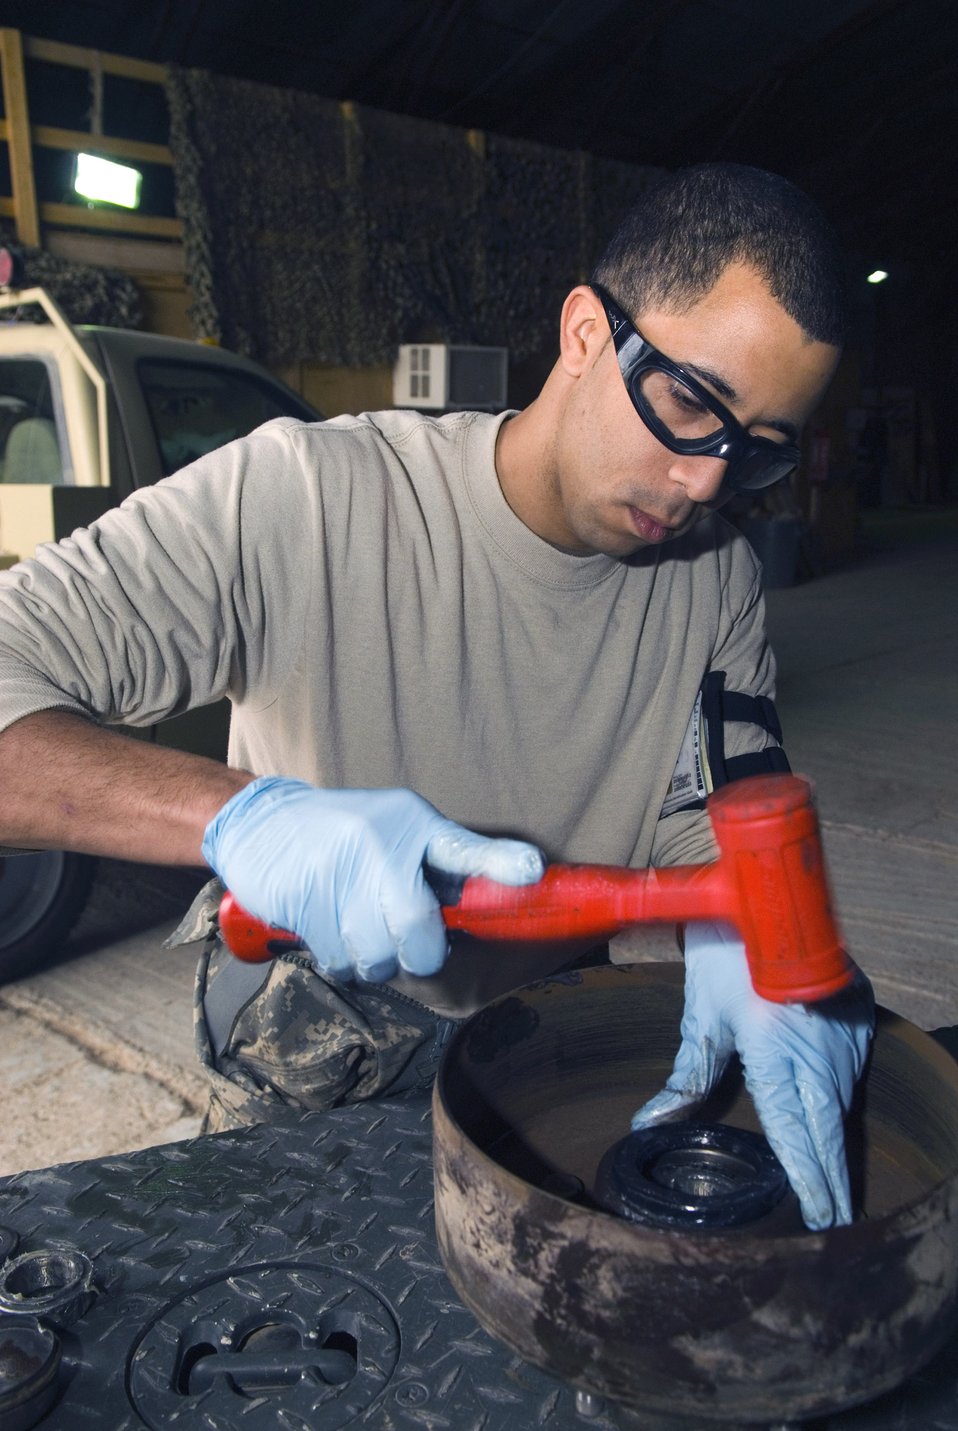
Munitions don't fly without these guys

Staff Sgt. Elvin Rose secures a bearing seal onto the brake drum of a munitions trailer Dec. 19 at Balad Air Base, Iraq. The trailer is being disassembled as part of a 720-day inspection to see if there are any problems that could make it inoperable. Sergeant Rose is a 332nd Expeditionary Maintenance Squadron munitions equipment maintainer and is deployed from Spangdahlem Air Base, Germany.